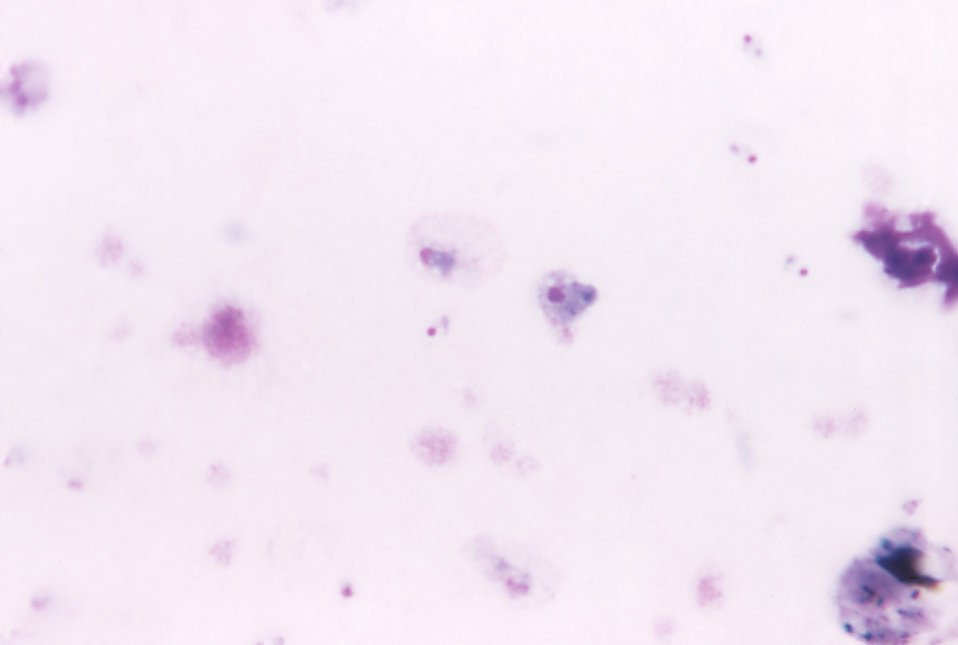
This thick film micrograph depicts a mature, and a compact growing P. vivax trophozoite using a Giemsa stain; Mag. 1125X.